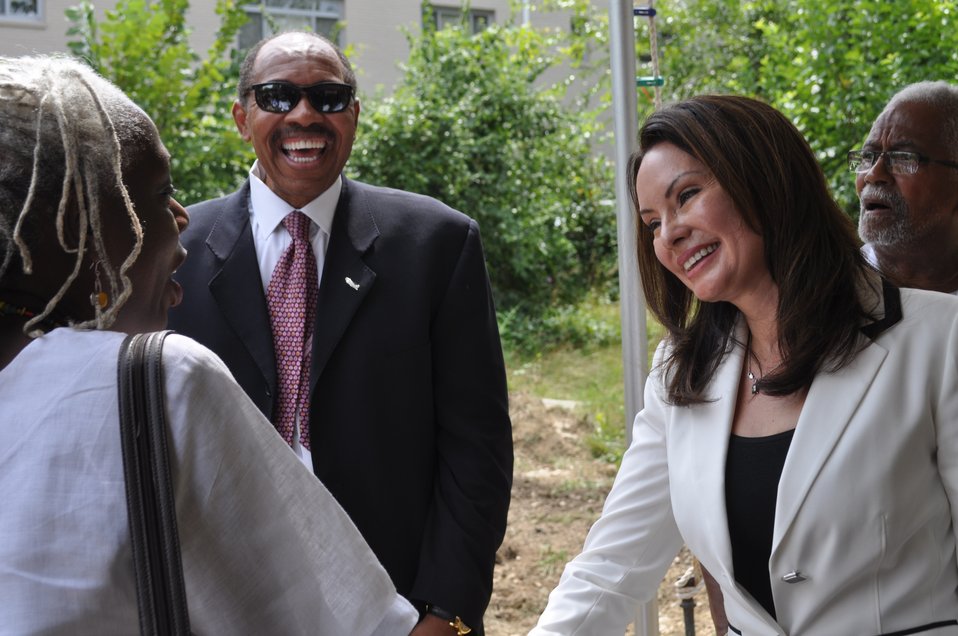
Treasurer Rios at a groundbreaking on new Vida Senior Residence funded in part by the Recovery Act, 7/27/2010

Treasurer Rios meeting with community members who attended the groundbreaking.